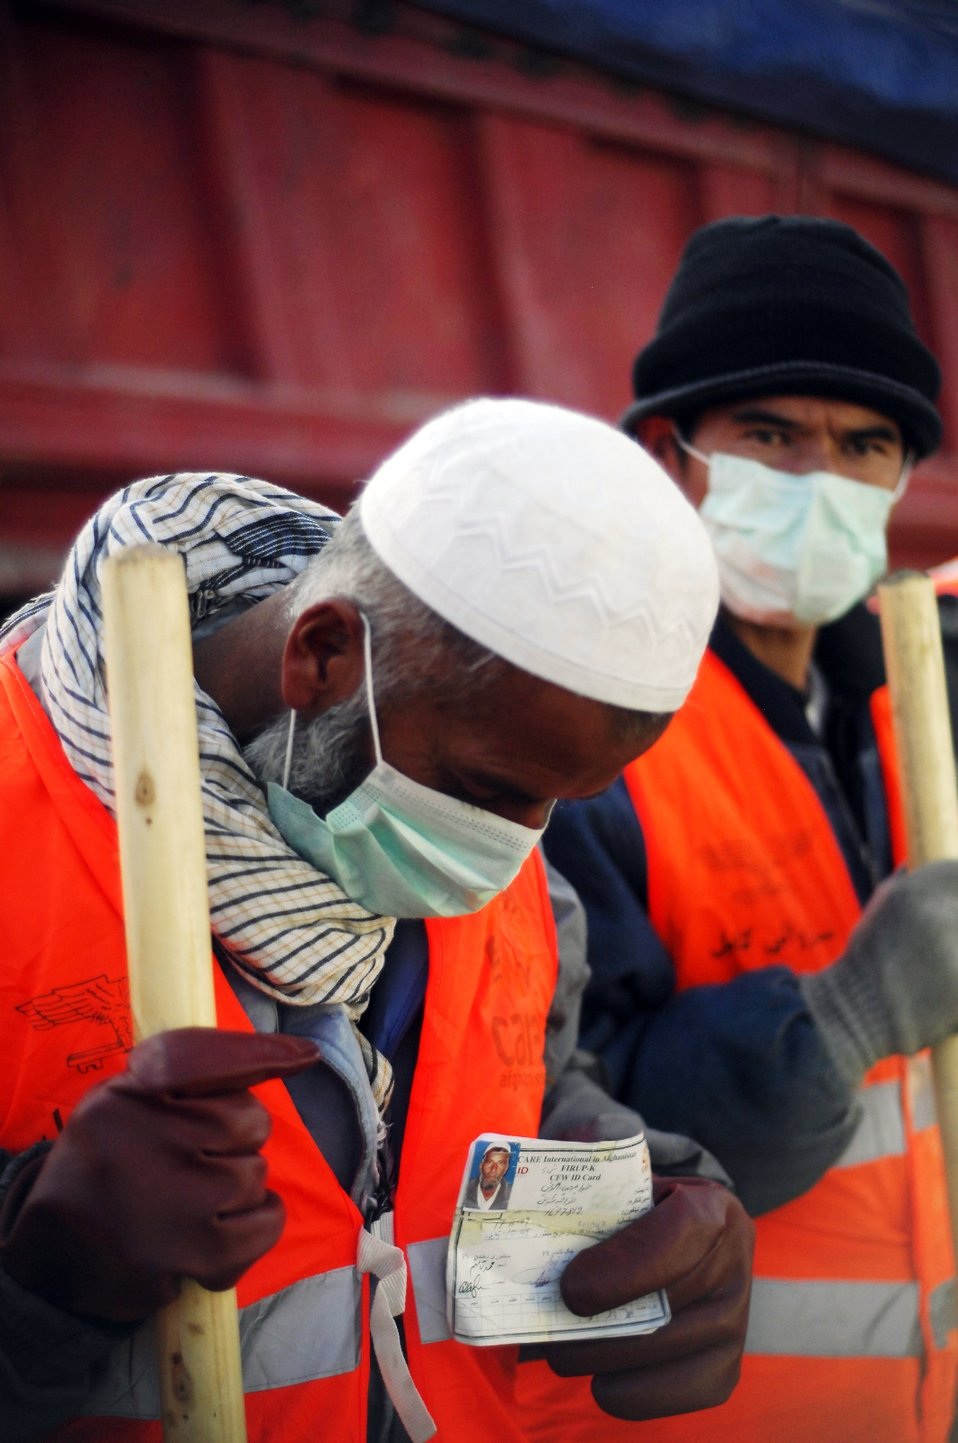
Care16